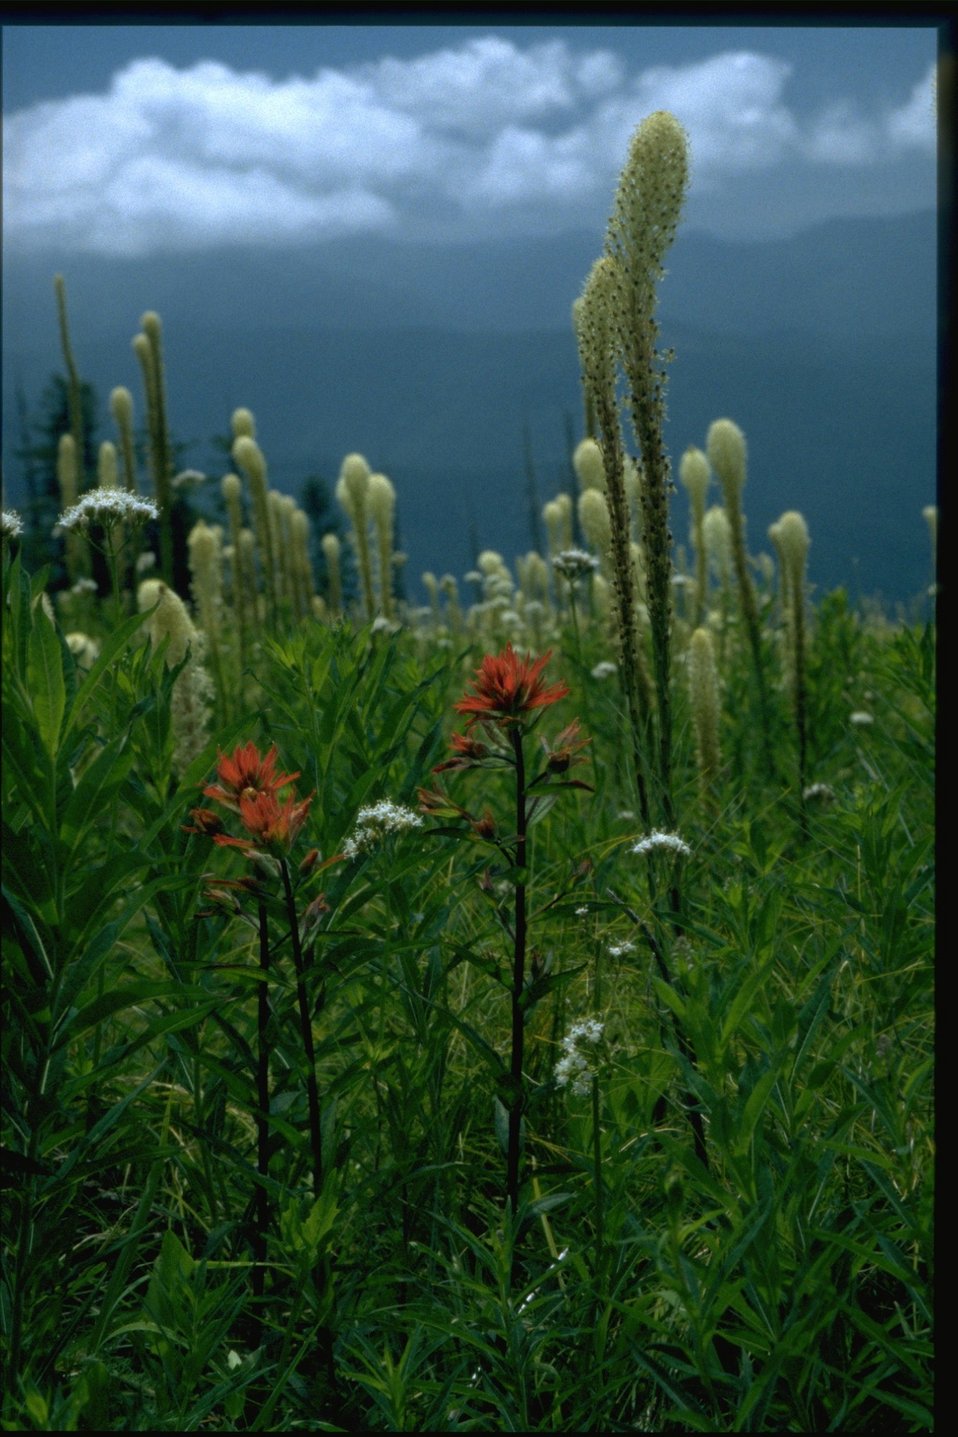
Medium shot of Castilleja, Xenophyllum, Archillea.